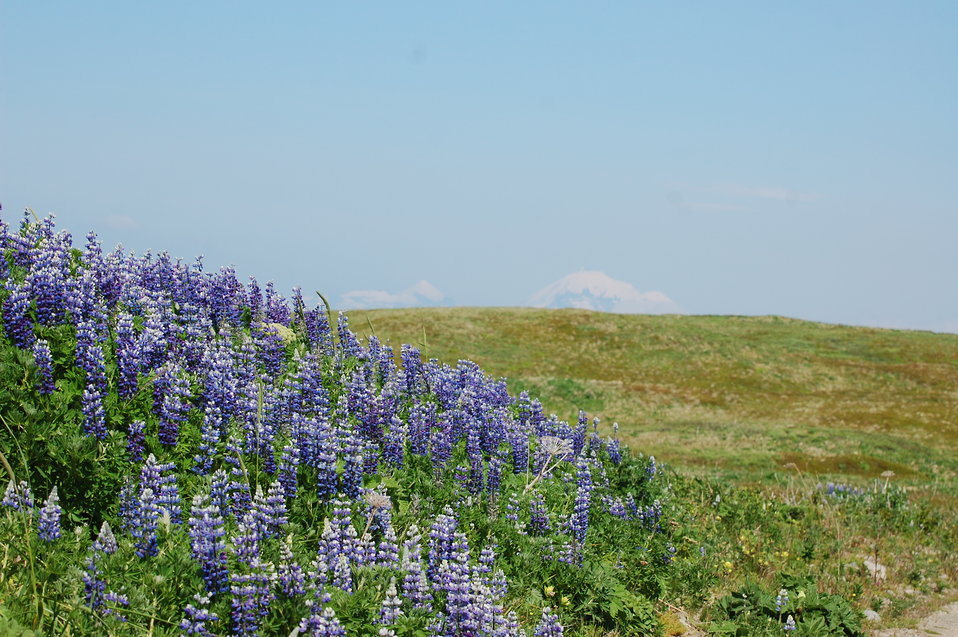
Lupines

Izembek National Wildlife Refuge